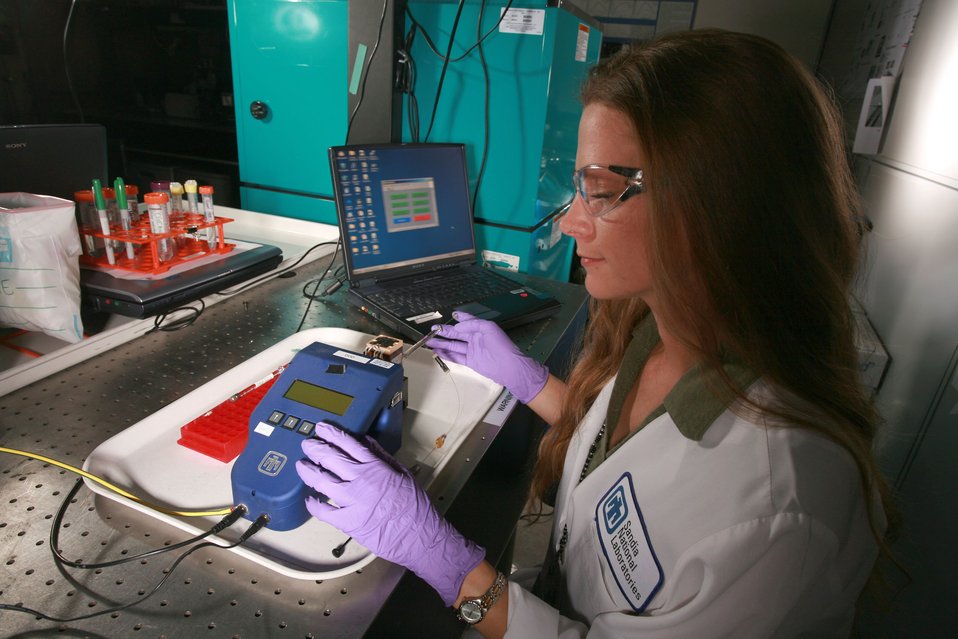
At Sandia National Laboratory in Livermore, CA, a researcher injects a sample into a handheld microseparations platform for analysis.

At SNL, a grant was awarded to develop a technology that can successfully detect deadly toxins from harmful algal blooms (HABs). The dense patches or blooms that sometimes accumulate near the surface of the water can produce potent neurotoxins that are transferred through the food chain, accumulating in zooplankton and shellfish, eventually harming or even killing marine mammals and humans that consume tainted shellfish. Researchers will use laser-induced fluorescence and other separation methods inherent in Sandia's uChemLab (Micro ChemLab ) technology. The research will focus on enhancing the early warning capability of detection is expected to lay the ground work for the development of a reliable, cost-effective prototype to simultaneously analyze multiple hab toxins in phytoplankton and/or shellfish in the field. The goal is to develop small, lightweight devices that could be fielded by oceanographers and marine biologists as part of their regular monitoring systems.